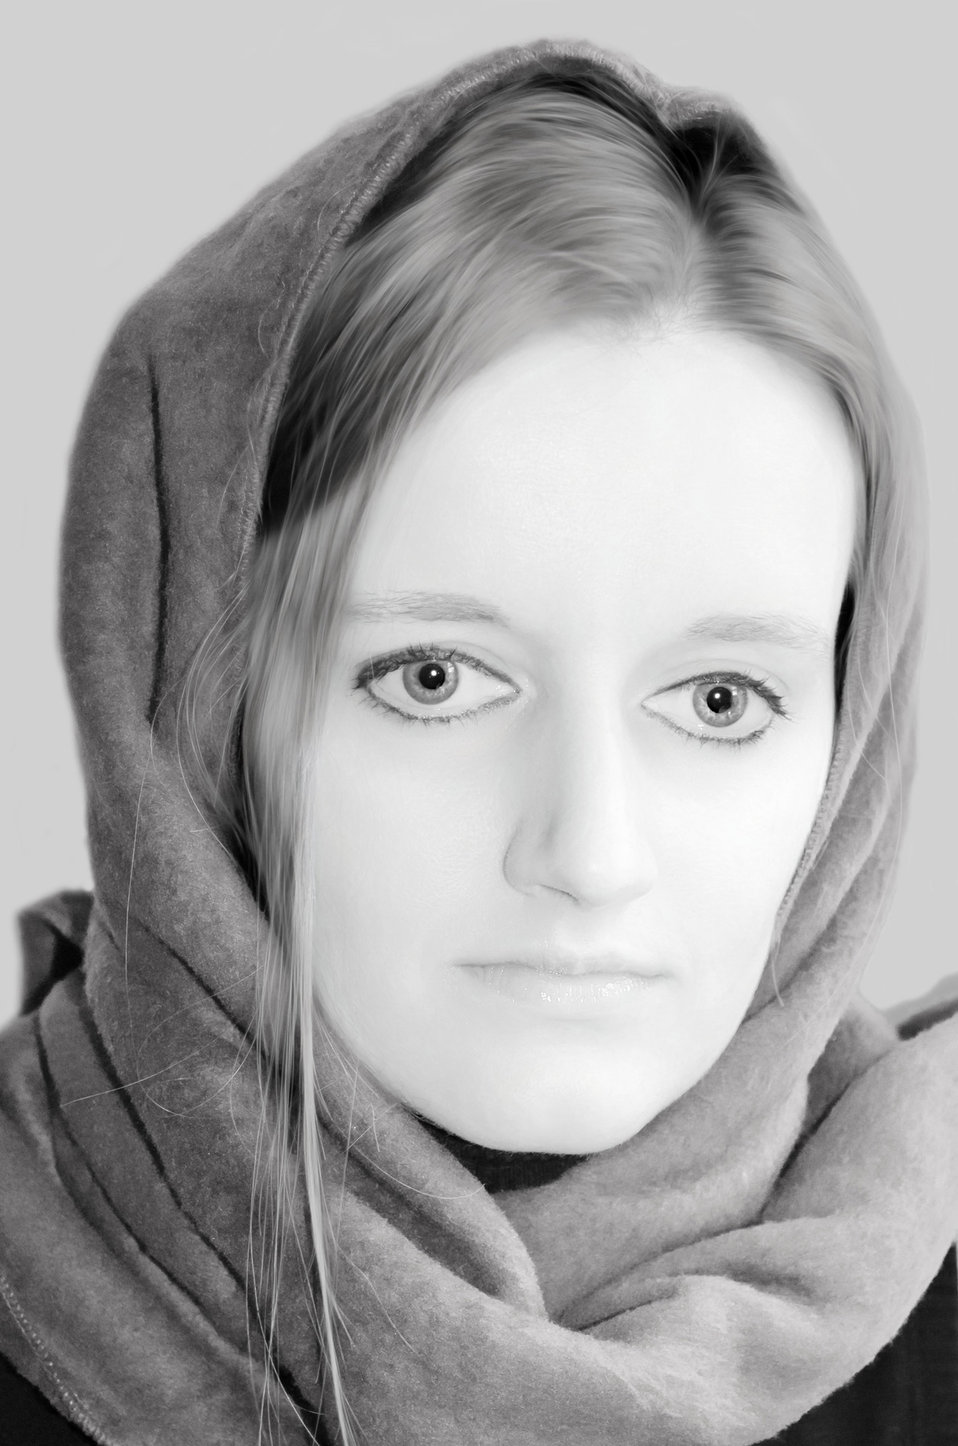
Woman - black and white.